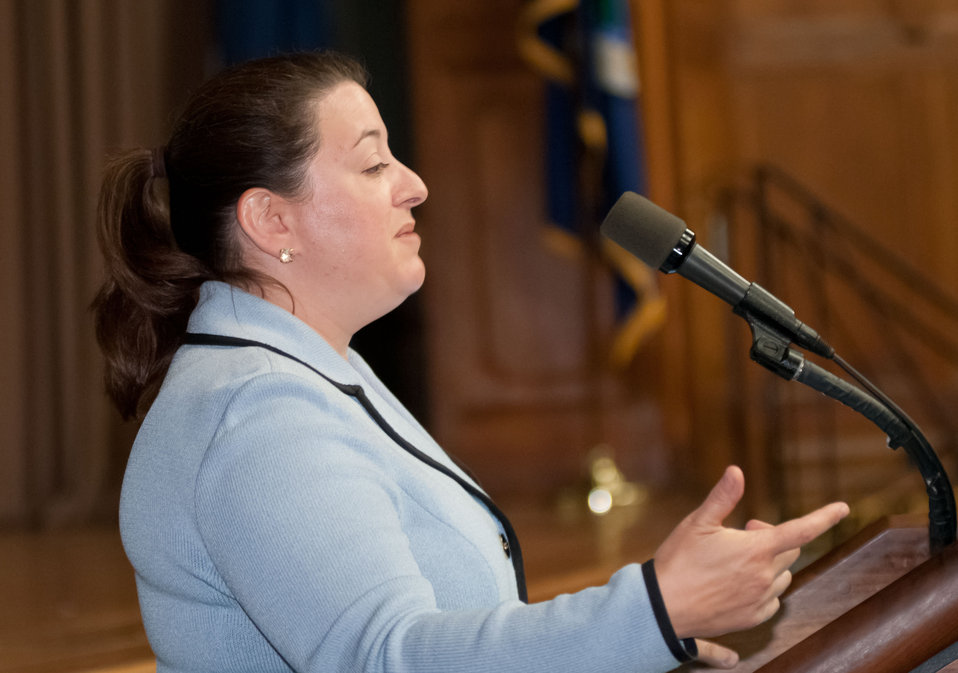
Senior Advisor to the Secretary of Agriculture Sarah Bittleman talked about the Agriculture perspectives on advanced drop-in biofuels, at the Industry Roundtable held in the Jefferson Auditorium, U.S.Department of Agriculture Headquarters in Washington, D.C., on Friday, May 18, 2012. Her talk discussed which feedstocks the USDA sees as coming advanced drop-in biofuels industry, what a transition from a food to a non-food related feedstock looks like and when/if they are required, and a detailed overview of the Commodity Credit Corporation (CCC) programs.